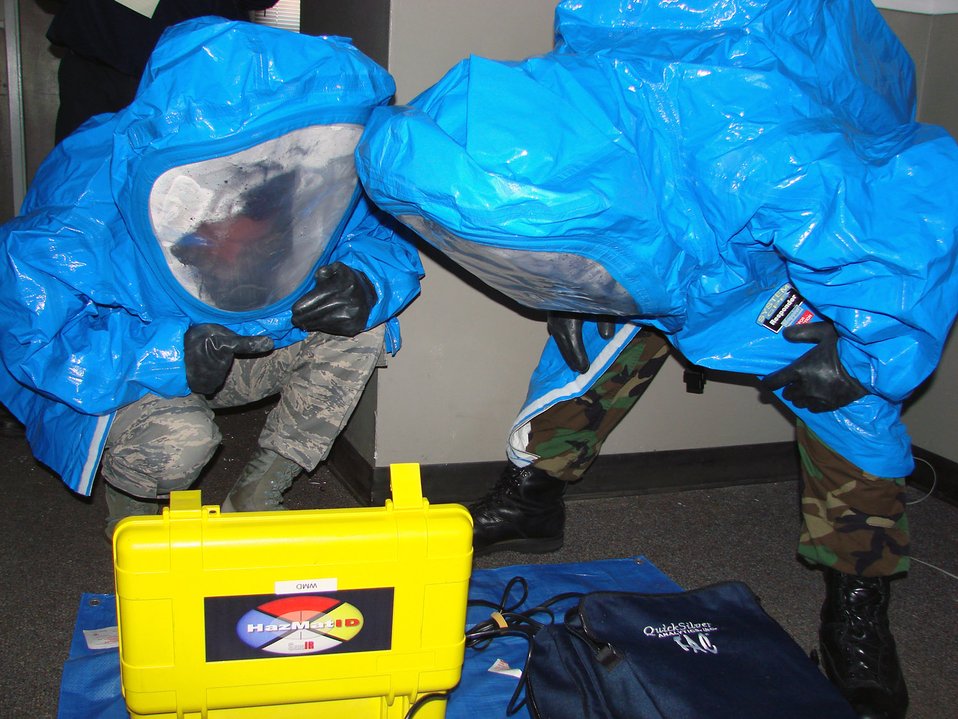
Did you say CSI or AFOSI?

Airman 1st Class Justin Barajas, 71st Medical Group bioenvironmental engineering, and Senior Airman Brock Evans, 71st Logistics Readiness Squadron civil engineering readiness, practice taking and analyzing samples during training April 15 at Vance Air Force Base, Okla., on how to process a hazardous materials incident. The training was provided by an Air Force Office of Special Investigations crime scene investigator.